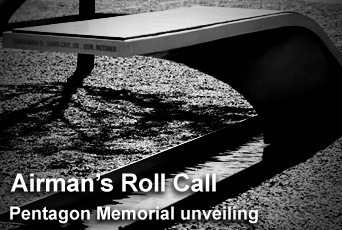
Airman's Roll Call: Pentagon Memorial unveiling

This week's Airman's Roll Call focuses on the unveiling of the Pentagon Memorial honoring those who died in the attack there on Sept. 11, 2001.